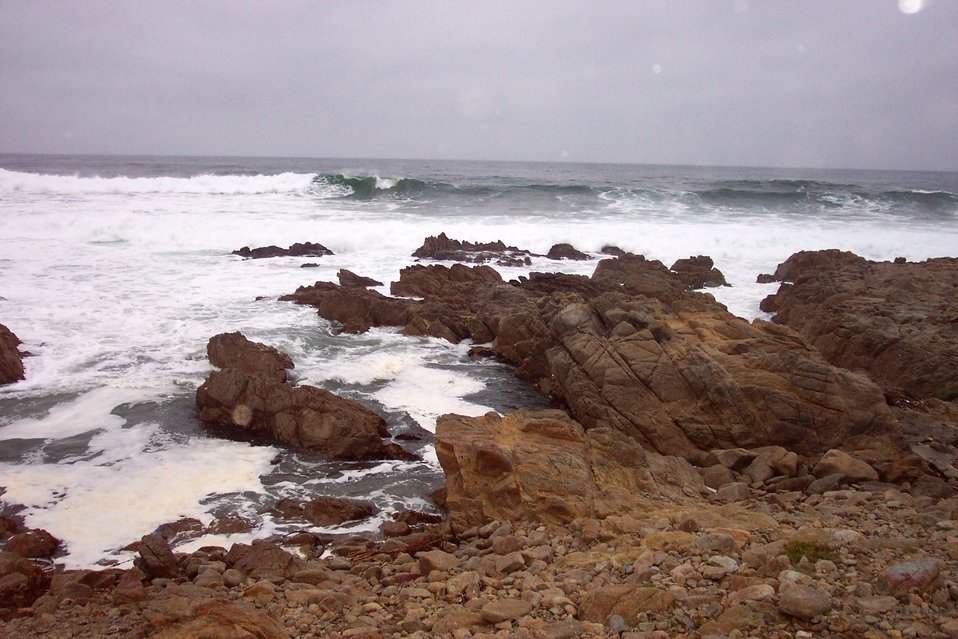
Rock and surf at Asilomar State Park.